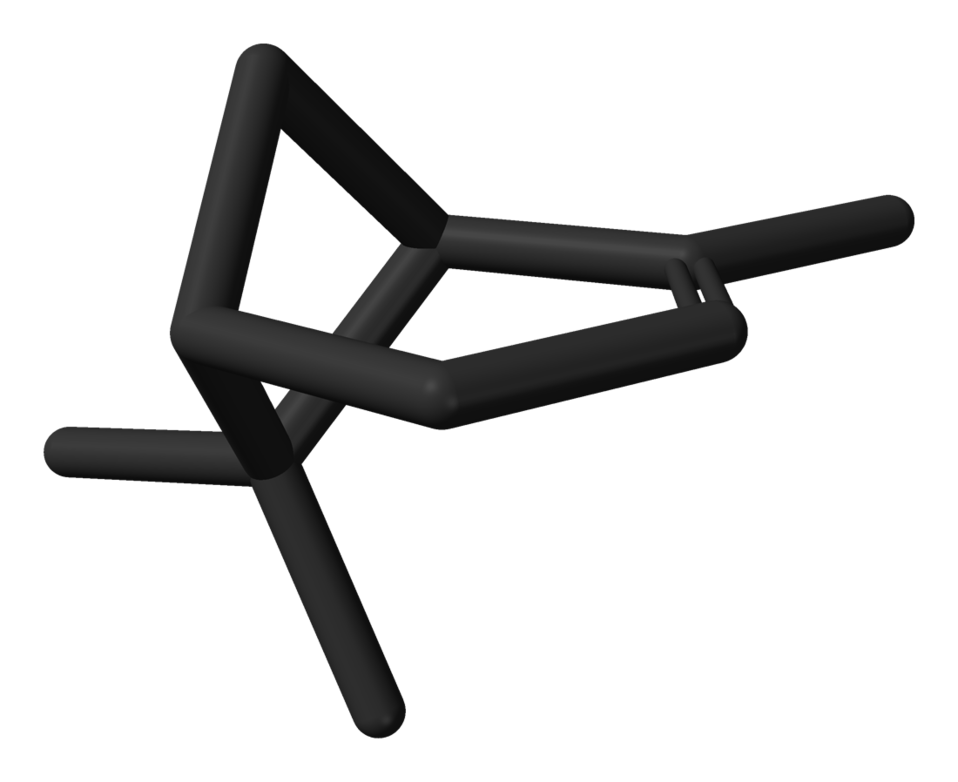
Stick model of the (1S)-(−)-α-pinene molecule, C10H16. X-ray crystallographic data from A. D. Bond and J. E. Davies (November 2001). '(1S)-(−)-α-Pinene'. Acta Cryst. 'E57' (11): o1039-o1040. DOI:10.1107/S1600536801016415. Image generated in Accelrys DS Visualizer.